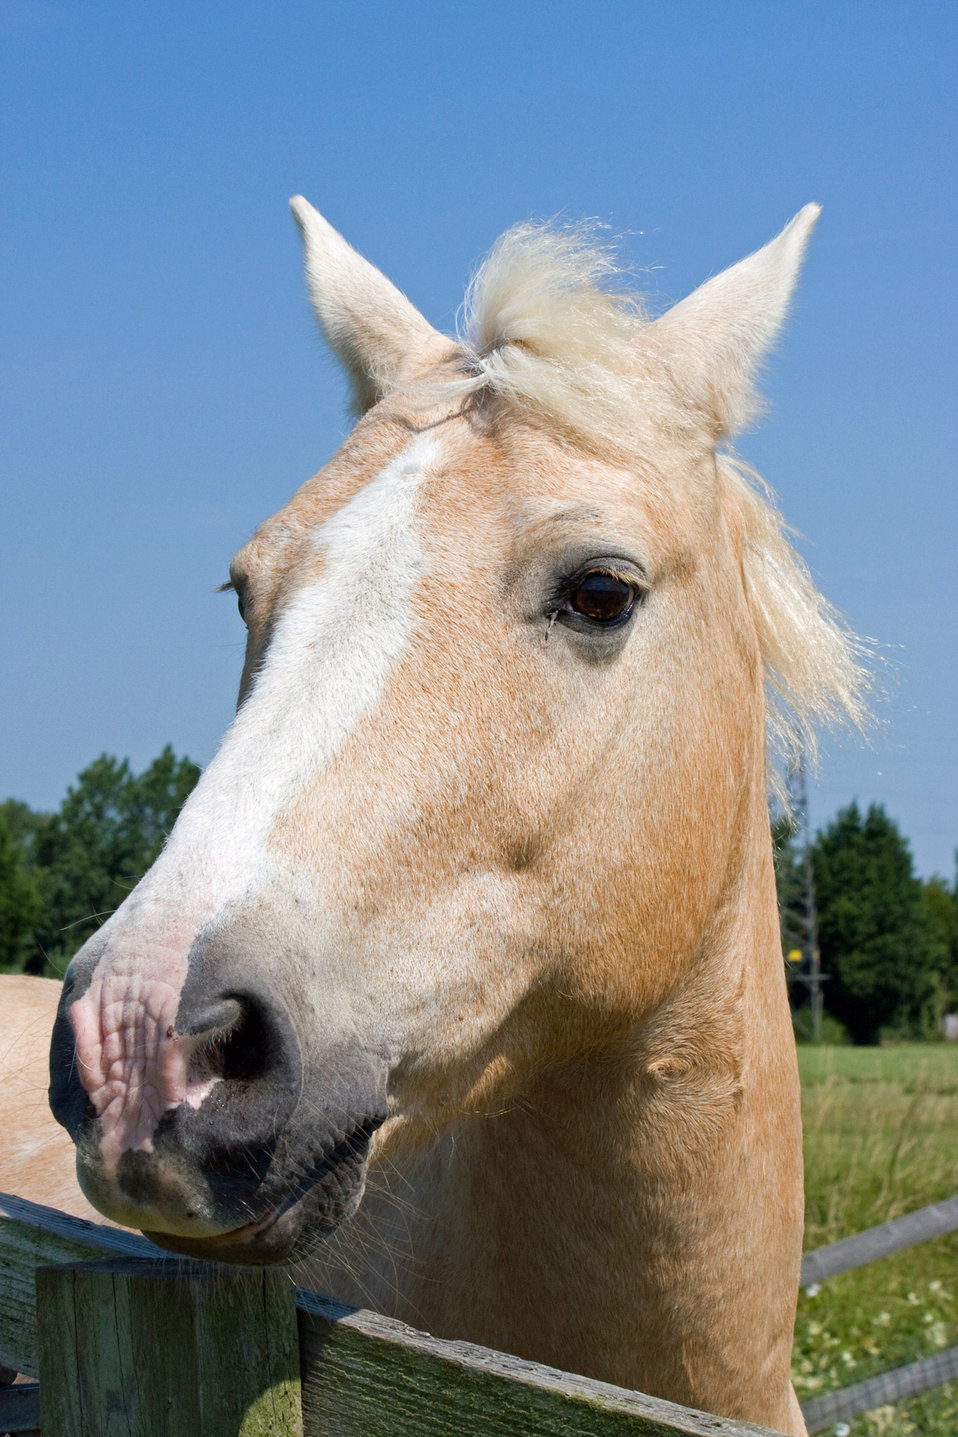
Horse head portrait

Close-up portrait of a horses head.